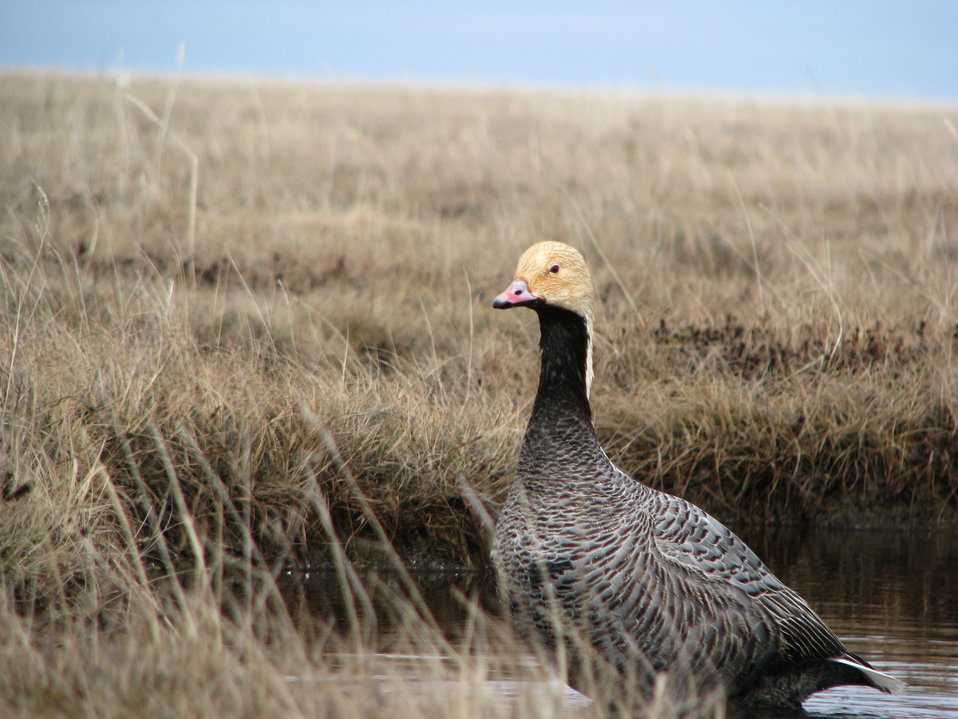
Emperor Goose

Yukon Delta NWR
The head of Emperor Geese is usually a bright white. Many of the geese we find along the coast have an orangish tint to their heads because of the different elements leached into the pond water.